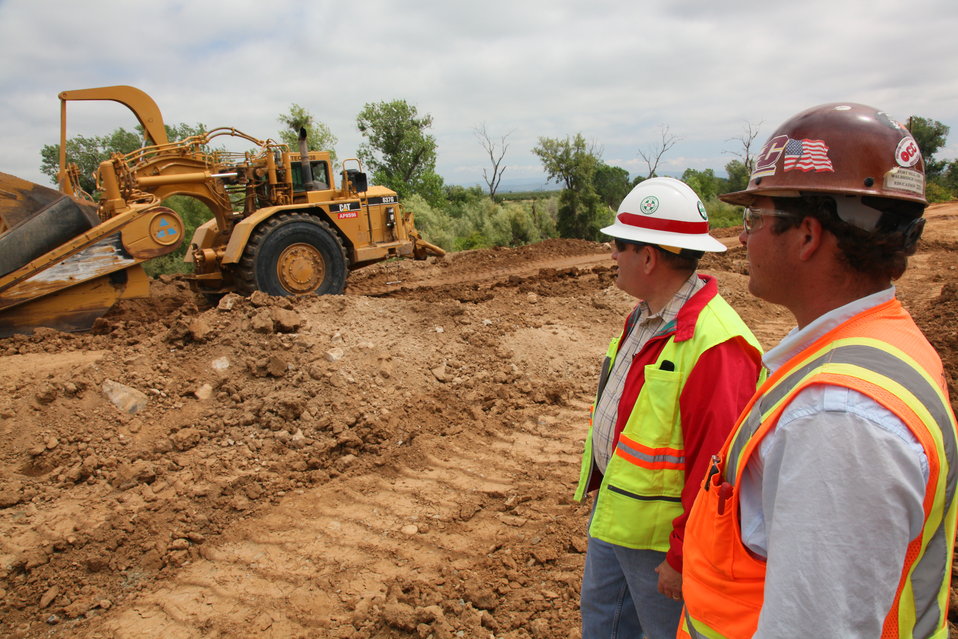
Corps moves forward with Marysville Ring Levee project

MARYSVILLE, Calif. – Marysville Ring Levee project manager Mark Ellis (left), with the U.S. Army Corps of Engineers Sacramento District, and a project safety officer oversee a heavy equipment scraper on the Marysville ring levee in Marysville, July 13. The Corps is using a deep soil mixing process, which combines clay bentonite and cement with existing soil to create a thick, solid surface that won’t allow water to leak through or beneath the levee, to upgrade a 4,000-foot section of the levee as part of the project’s first phase. This $10.8 million phase of the project has been funded by the American Recovery and Reinvestment Act of 2009 and is scheduled to be completed in November 2011.